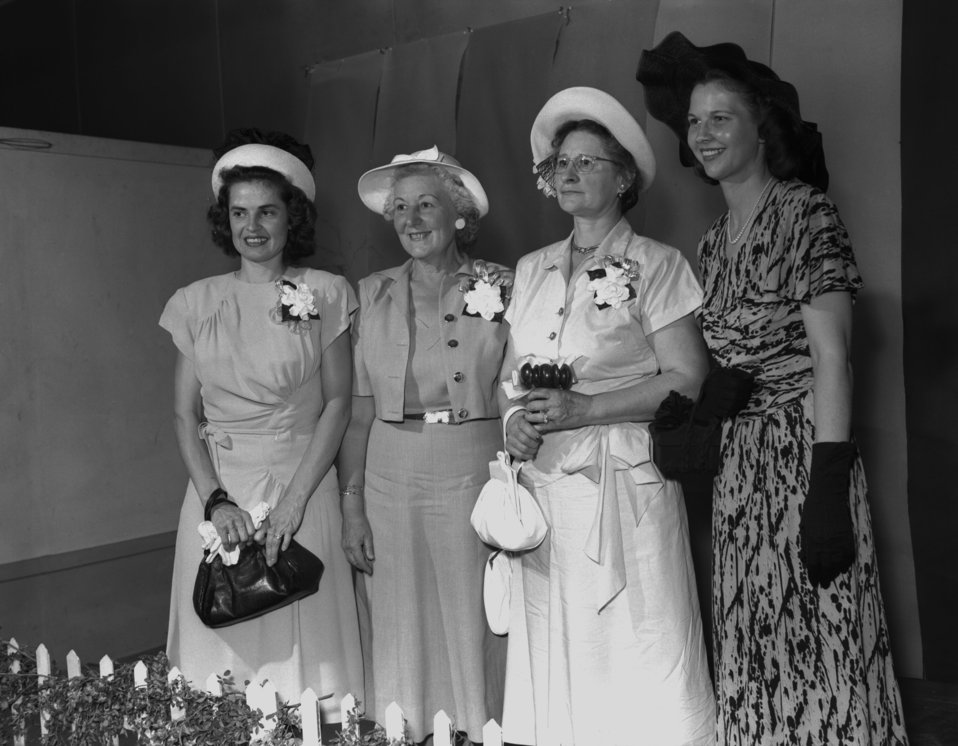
Womens Club New Officiers Oak Ridge

004542 DOE photo by Ed Westcott

Oak Ridge Tennessee May 1948